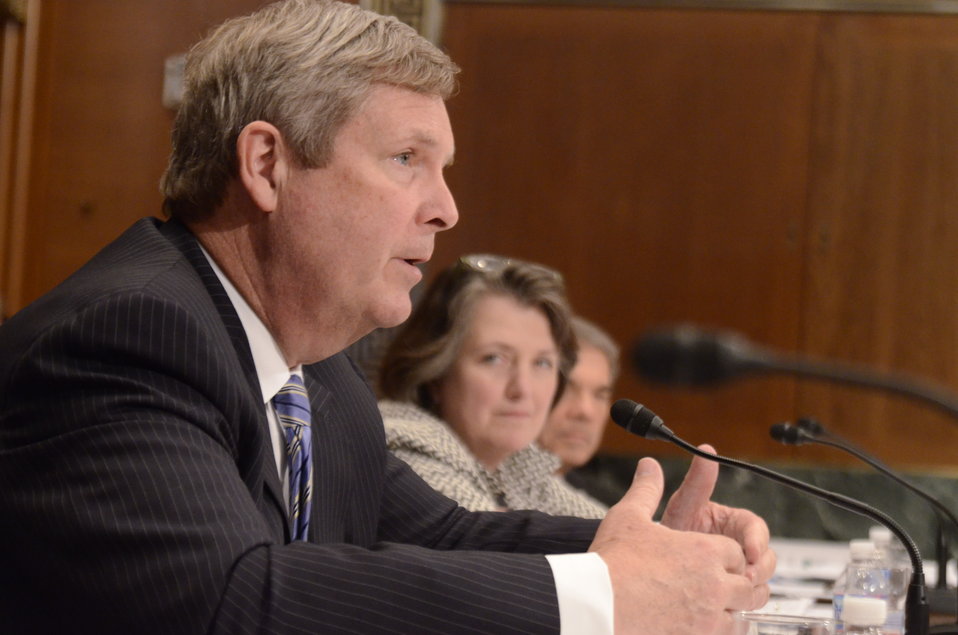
Agriculture Secretary Tom Vilsack testifies before the Senate Agriculture Appropriations Committee on the fiscal year 2013 budget at the Dirksen Senate Office Building in Washington, D.C., on Thursday, March 29, 2012.